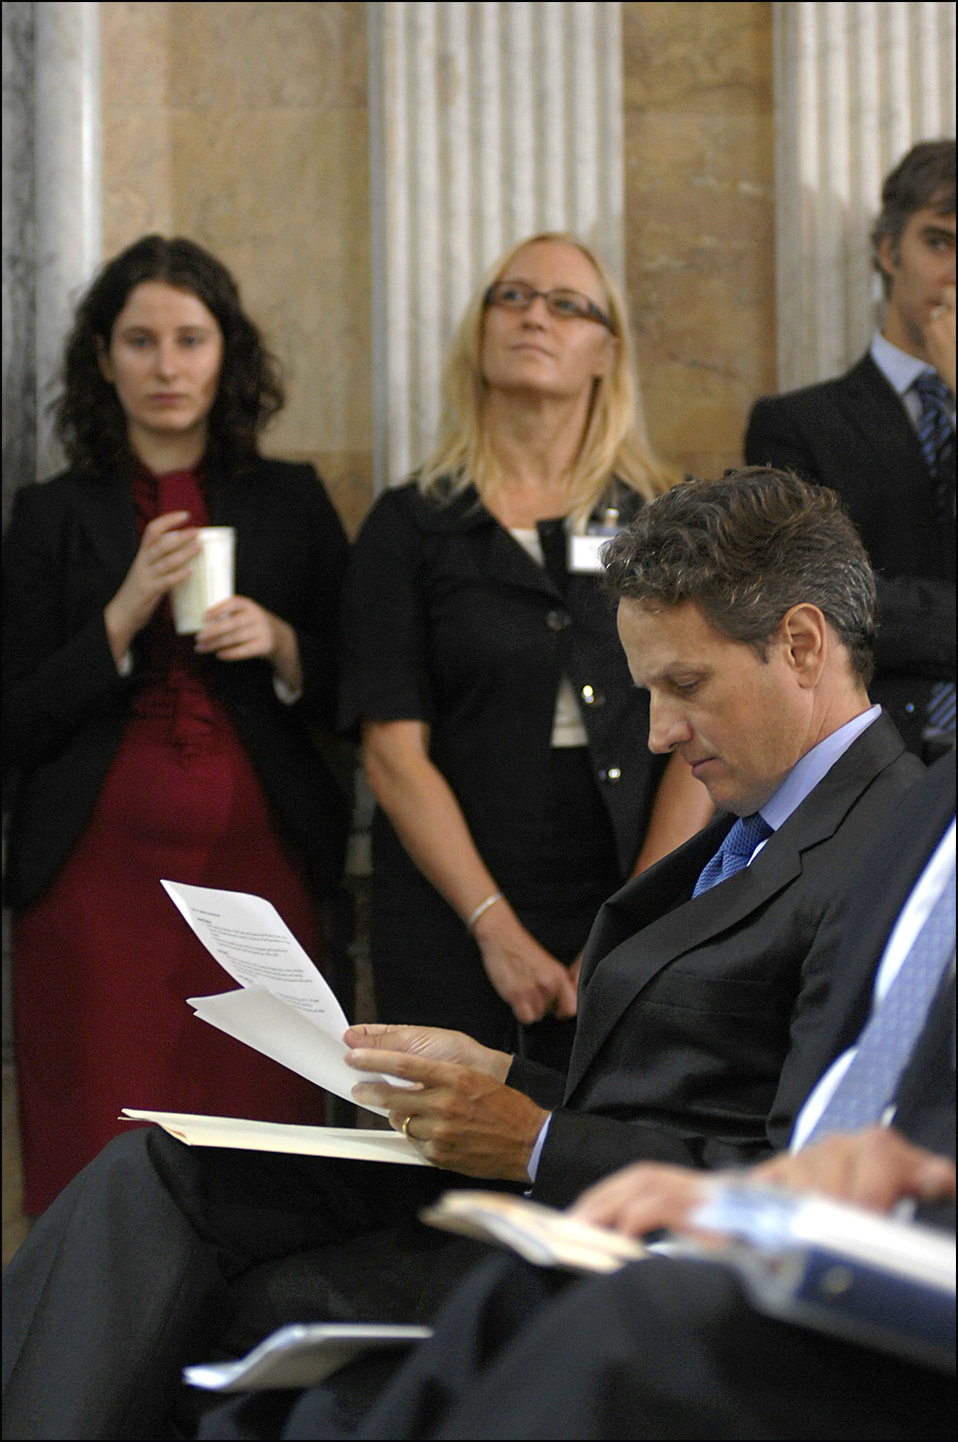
Conference on the Future of Housing Finance, 08/17/2010

Secretary Geithner reviewing notes before moderating a panel at the Conference on the Future of Housing Finance. The conference provided an additional opportunity for the Administration to hear a diverse set of perspectives on the key issues surrounding housing finance reform and to make certain that all of the best ideas are on the table as it continues to develop a comprehensive housing finance reform proposal for delivery to Congress by January 2011.